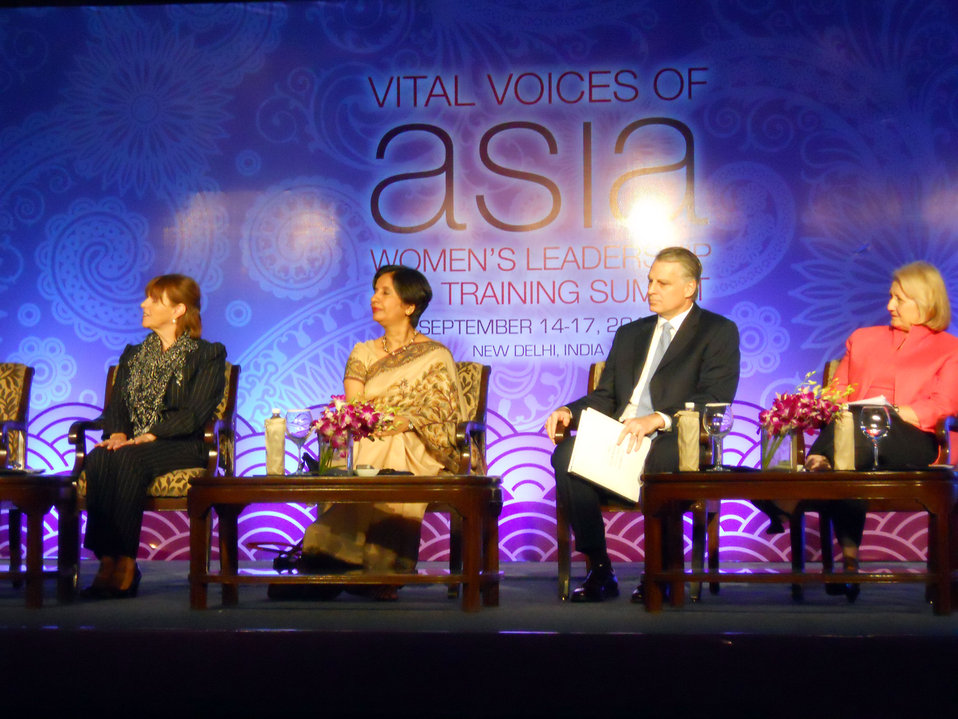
Vital Voices' Davis, Indian Foreign Secretary Rao, Ambassador Roemer, and Ambassador Verveer Participate in a Panel Discussion

Vital Voices' Susan Davis (left), Indian Foreign Secretary Nirupama Rao (second from left), U.S. Ambassador to India Timothy J. Roemer (third from left), and U.S. Ambassador-at-Large for Global Women’s Issues Melanne Verveer (fourth from left) participate in a panel discussion moderated by CNN International's Zain Verjee at the Vital Voices Women's Empowerment Summit in New Delhi, India, on September 15, 2010.